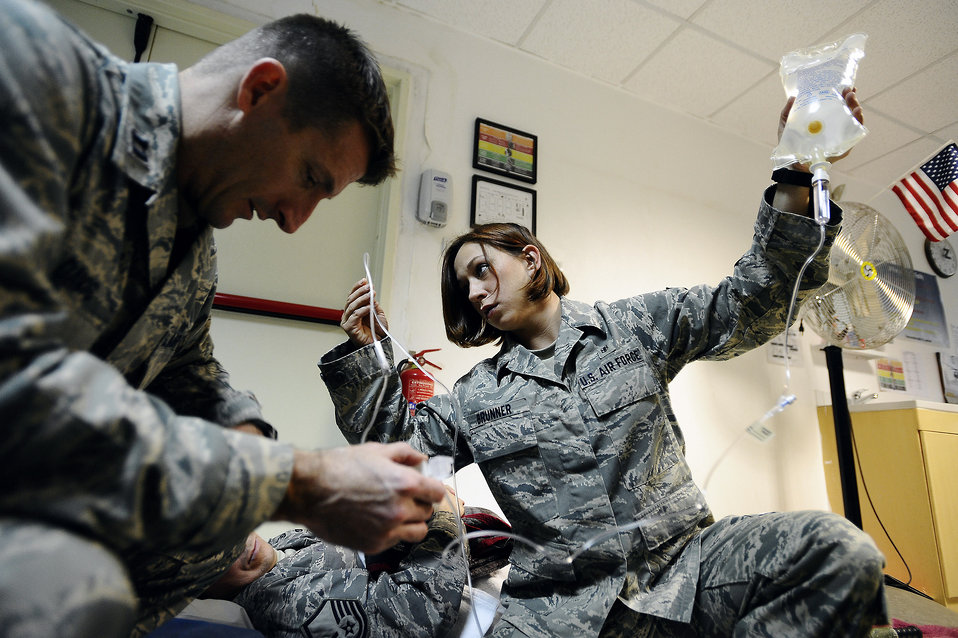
Warrior care

Capt. John Davis troubleshoots an intravenous pump as Senior Airman Samantha Brunner inspects the IV pump's port for any kind of blockage Nov. 27 at the Contingency Aeromedical Staging Facility on Joint Base Balad, Iraq. Both Airmen were preparing patients for an aeromedical evacuation flight. Airman Brunner, an aerospace medical service journeyman with the 332nd Expeditionary Aerospace Medical Squadron and native of Washington, Pa., is deployed from the 911th Airlift Wing at Pittsburgh International Airport Air Reserve Station, Pa. Captain Davis, a clinical nurse with the 332nd Expeditionary Aerospace Medical Squadron and native of Satellite Beach, Fla., is deployed from Patrick Air Force Base, Fla.